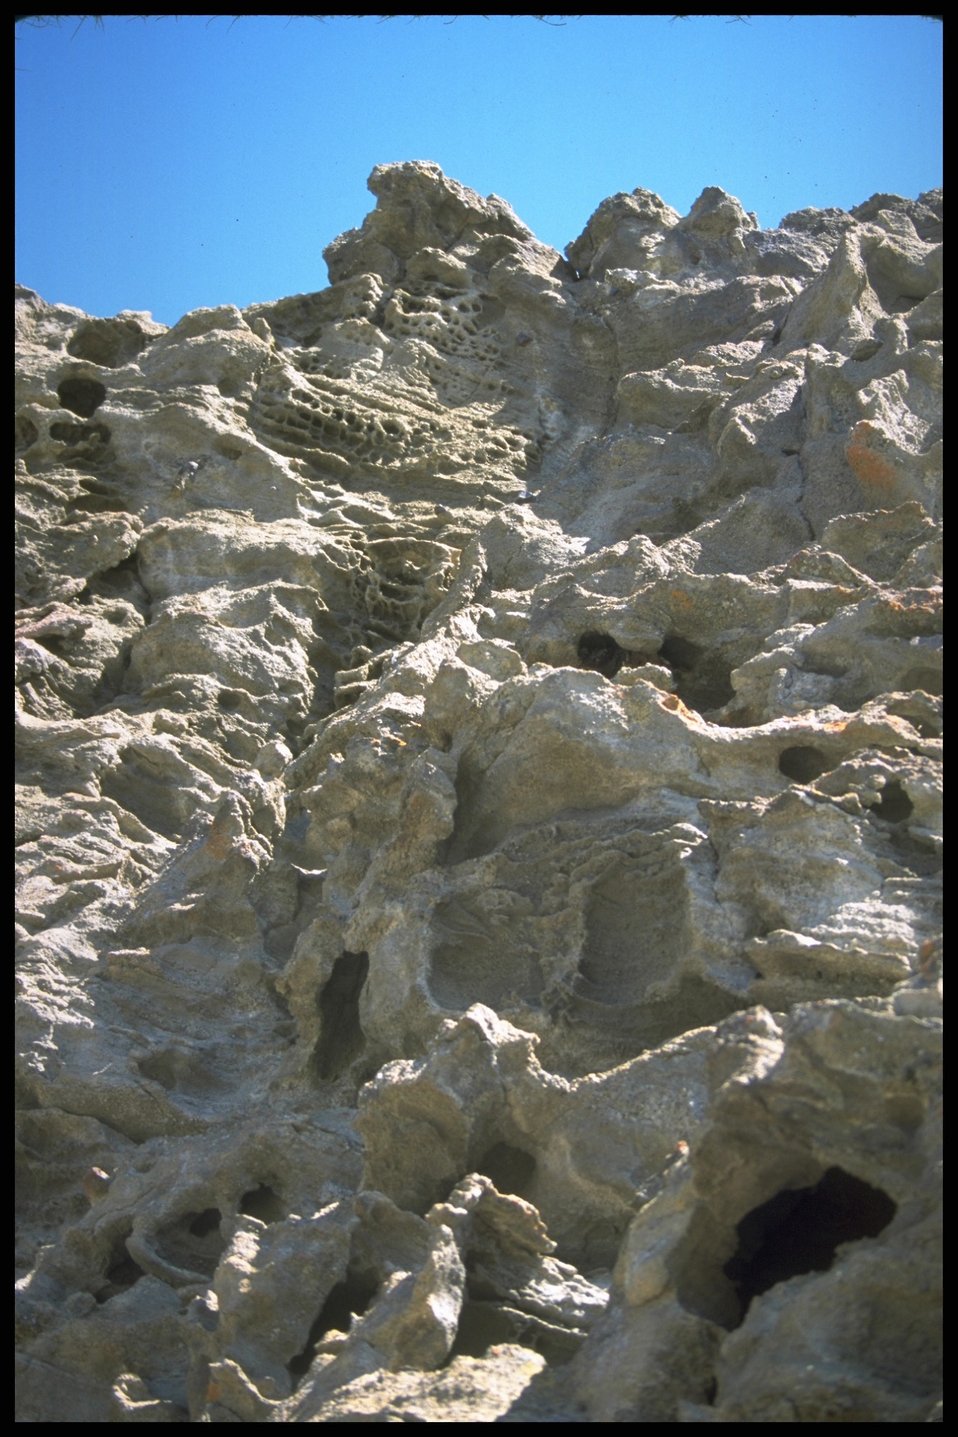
Rock formation, Lost Forest area, Lakeview District.